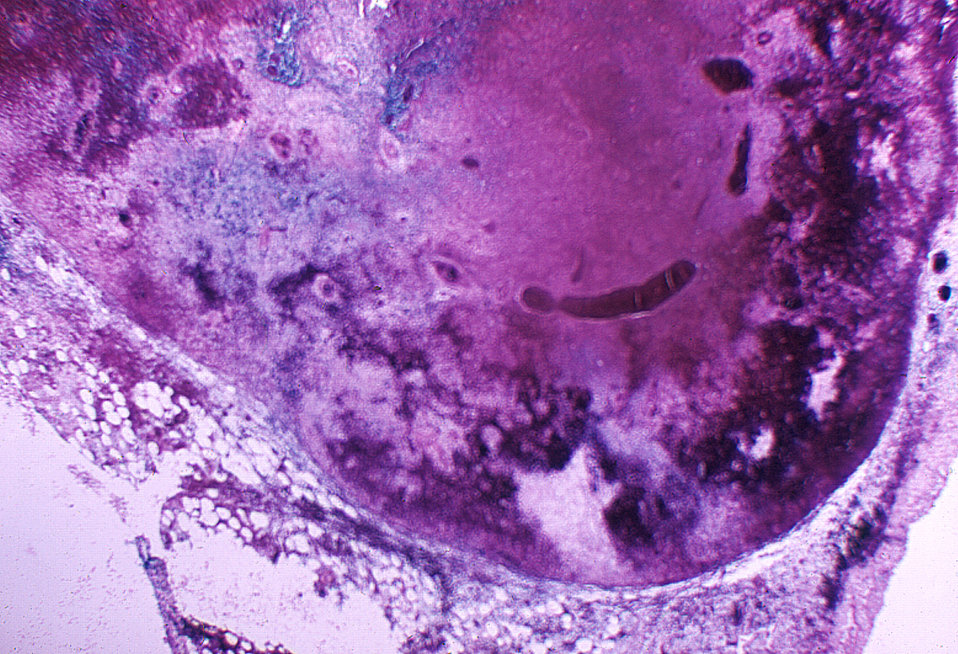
Severe hemorrhagic necrosis of lymph node due to anthrax.